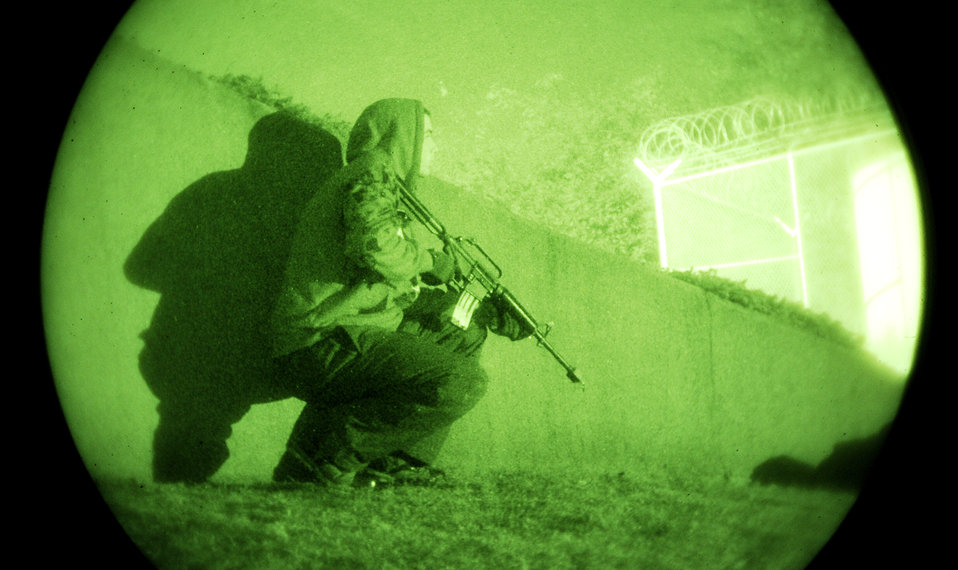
Night exercise at Osan Air Base

An